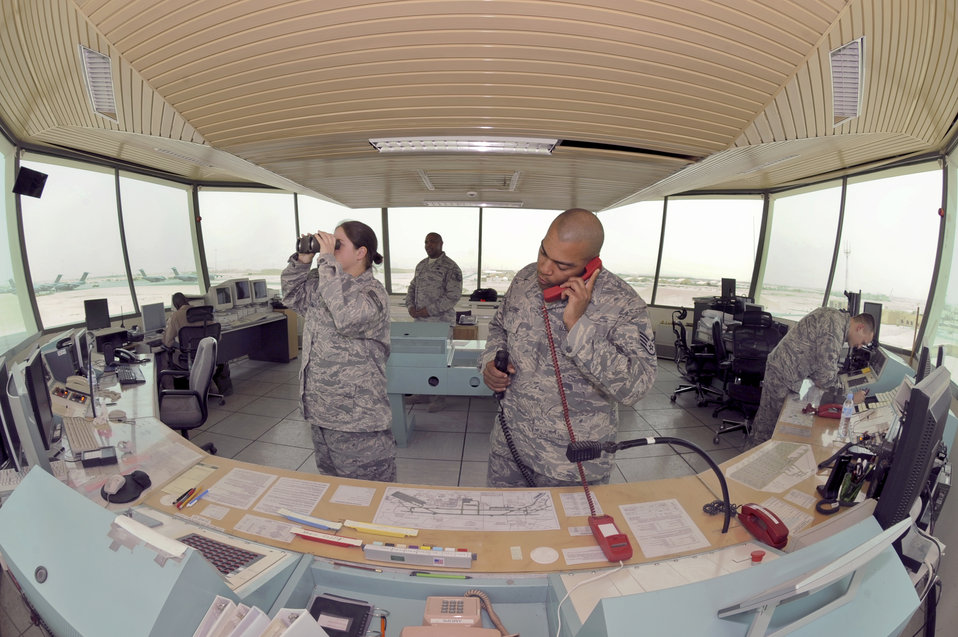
Controllers keep aircraft moving

Air traffic controllers from the 379th Expeditionary Operation Support Squadron monitor aircraft movement on the flightline here May 18 at an air base in Southwest Asia. The operation tempo of the flightline can greatly increase at times causing all air traffic controllers to perform multiple tasks at once.